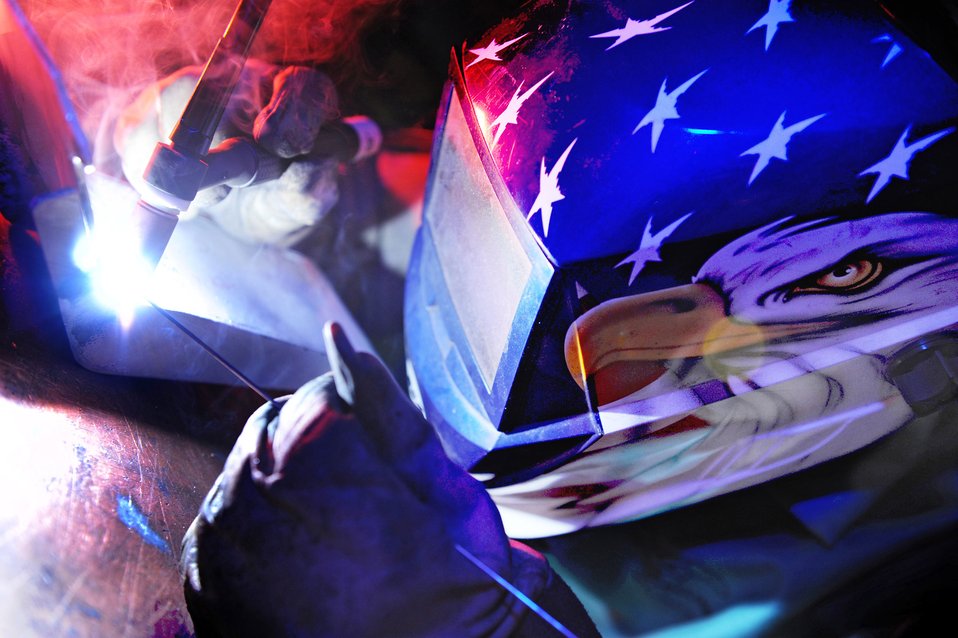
Eagle eye welder

Senior Airman Nathan Schroeder welds a crack on a landing gear cover Feb. 24, 2009, at Ellsworth Air Force Base, S.D. The cover protects hydraulic lines on the landing gear from damage.